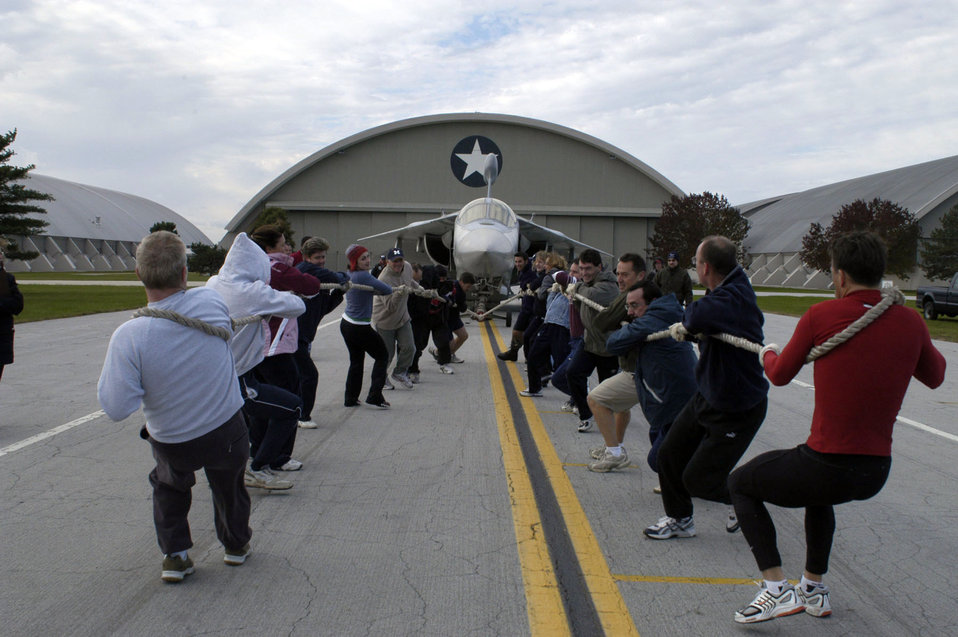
Teams pull for charity

A team begins to pull a 60,000 pound EF-111 Raven during the 2006 CFC Aircraft Pull Oct. 12 at the National Museum of the U.S. Air Force at Wright-Patterson Air Force Base, Ohio. Teams pull the aircraft as far as they can in 45 seconds. The team pulling the aircraft the greatest distance is the winner. Team entry fees are donated to the CFC.